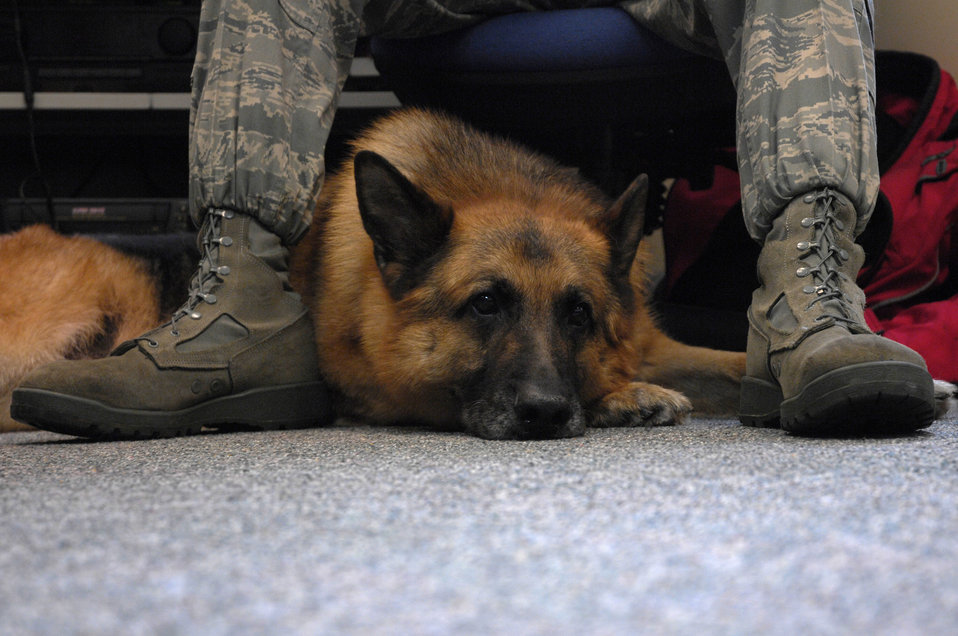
Ready for the rocker

Whiskey relaxes with his handler Tech. Sgt. Chris Beavers June 24 at Royal Air Force Feltwell, England. Whiskey is retiring as an explosive protection military working dog because of medical reasons after serving more than six years at RAF Lakenheath, England.